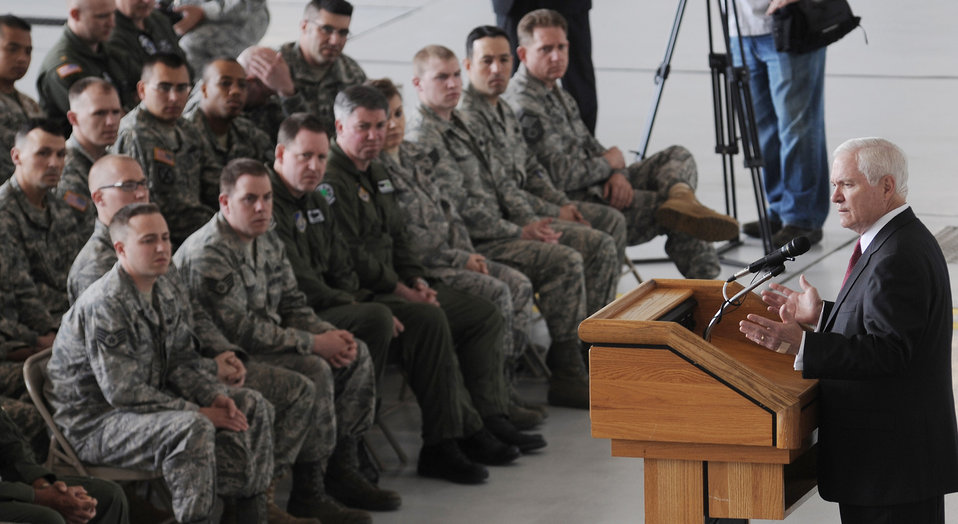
Gates visits Elmendorf, addresses servicemembers

Secretary of Defense Robert M. Gates speaks to military servicemembers during a June 1 town hall meeting at Elmendorf Air Force Base, Alaska. Secretary Gates stopped at Elmendorf AFB enroute to Fort Greely, Alaska, to tour the Missile Defense Agency facilities there.